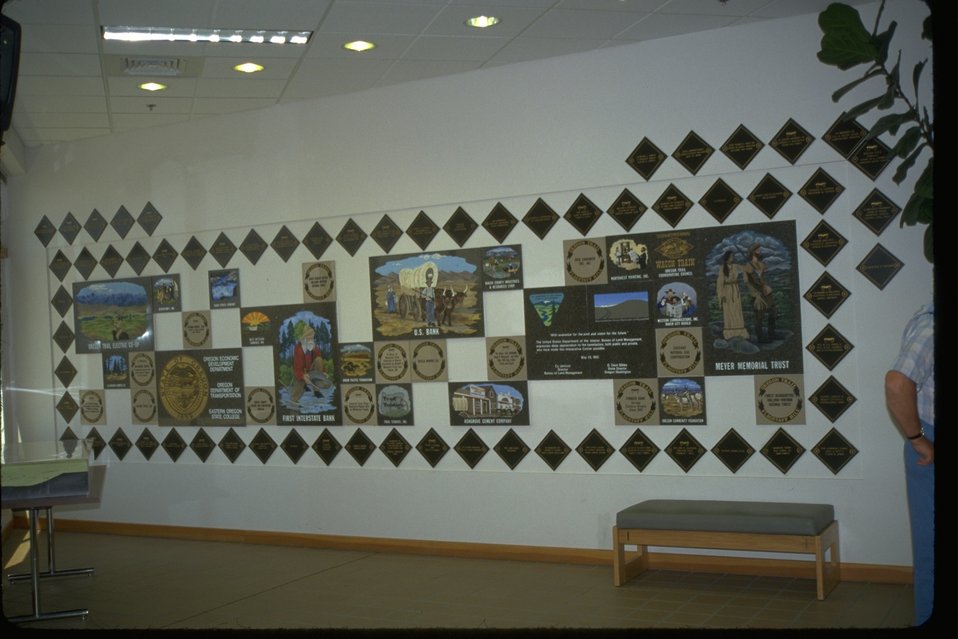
Acknowledgement Room at the NHOTIC.